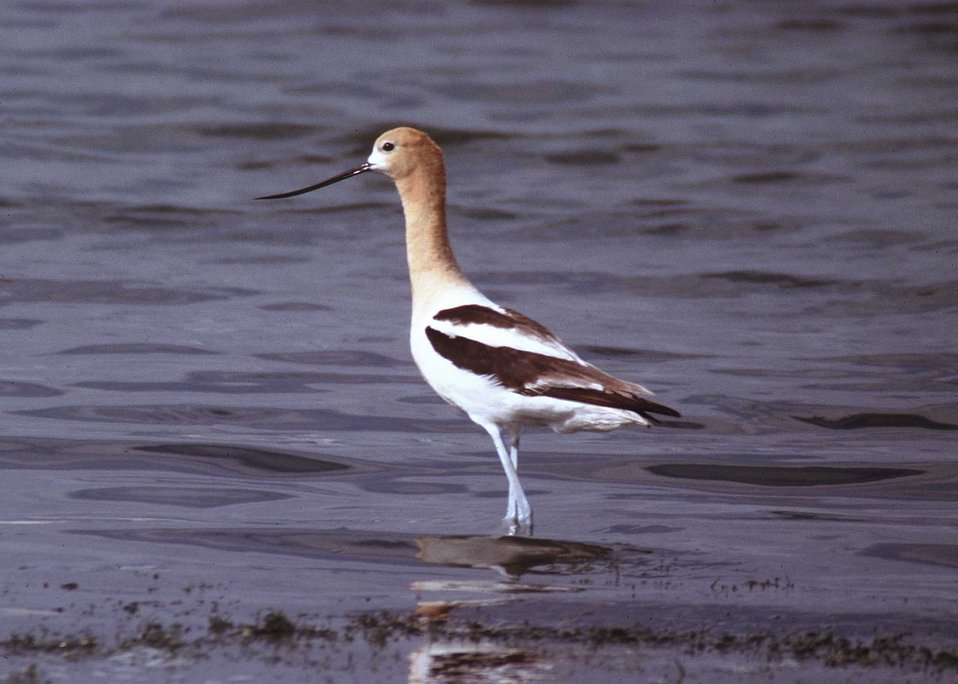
American avocet in a wetland.